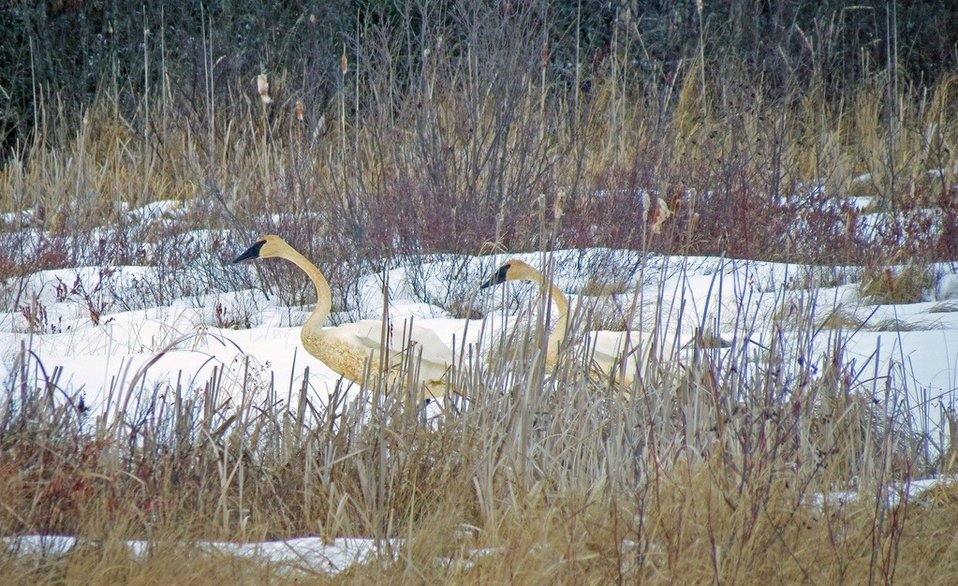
Trumpeter swans make their way through the snow at Seney National Wildlife Refuge, MI> Credit: Larry McGahey, Creative Commons